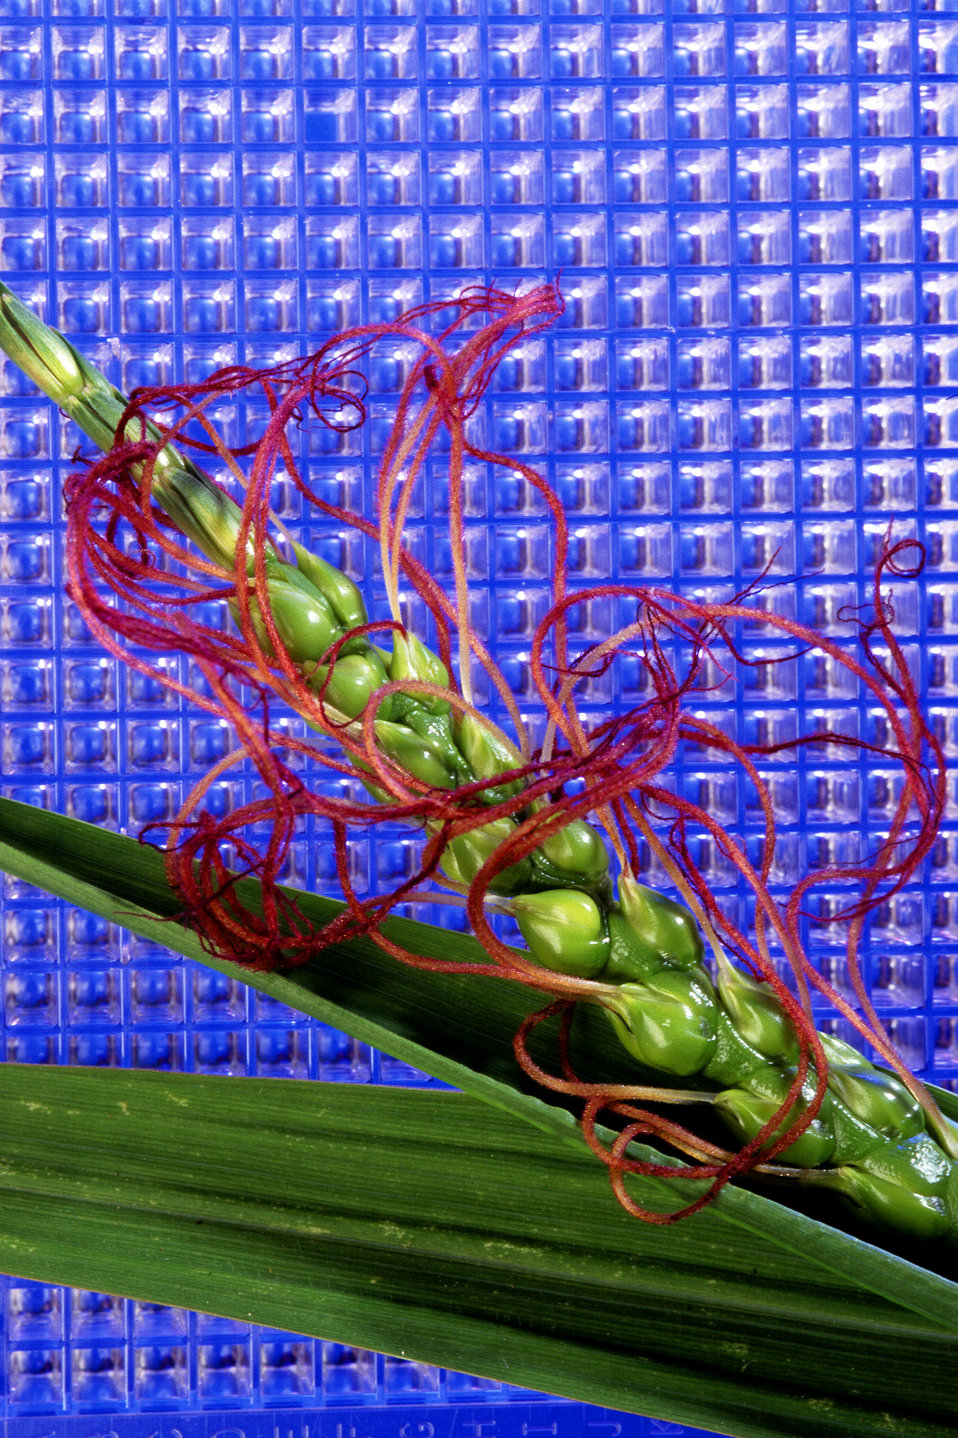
This is an image of a corn-eastern gamagrass hybrid. Eastern gamagrass is a native grass with a gene pool that has a lot to offer corn, including resistance to cold and insects, as well as tolerance to drought and flood.